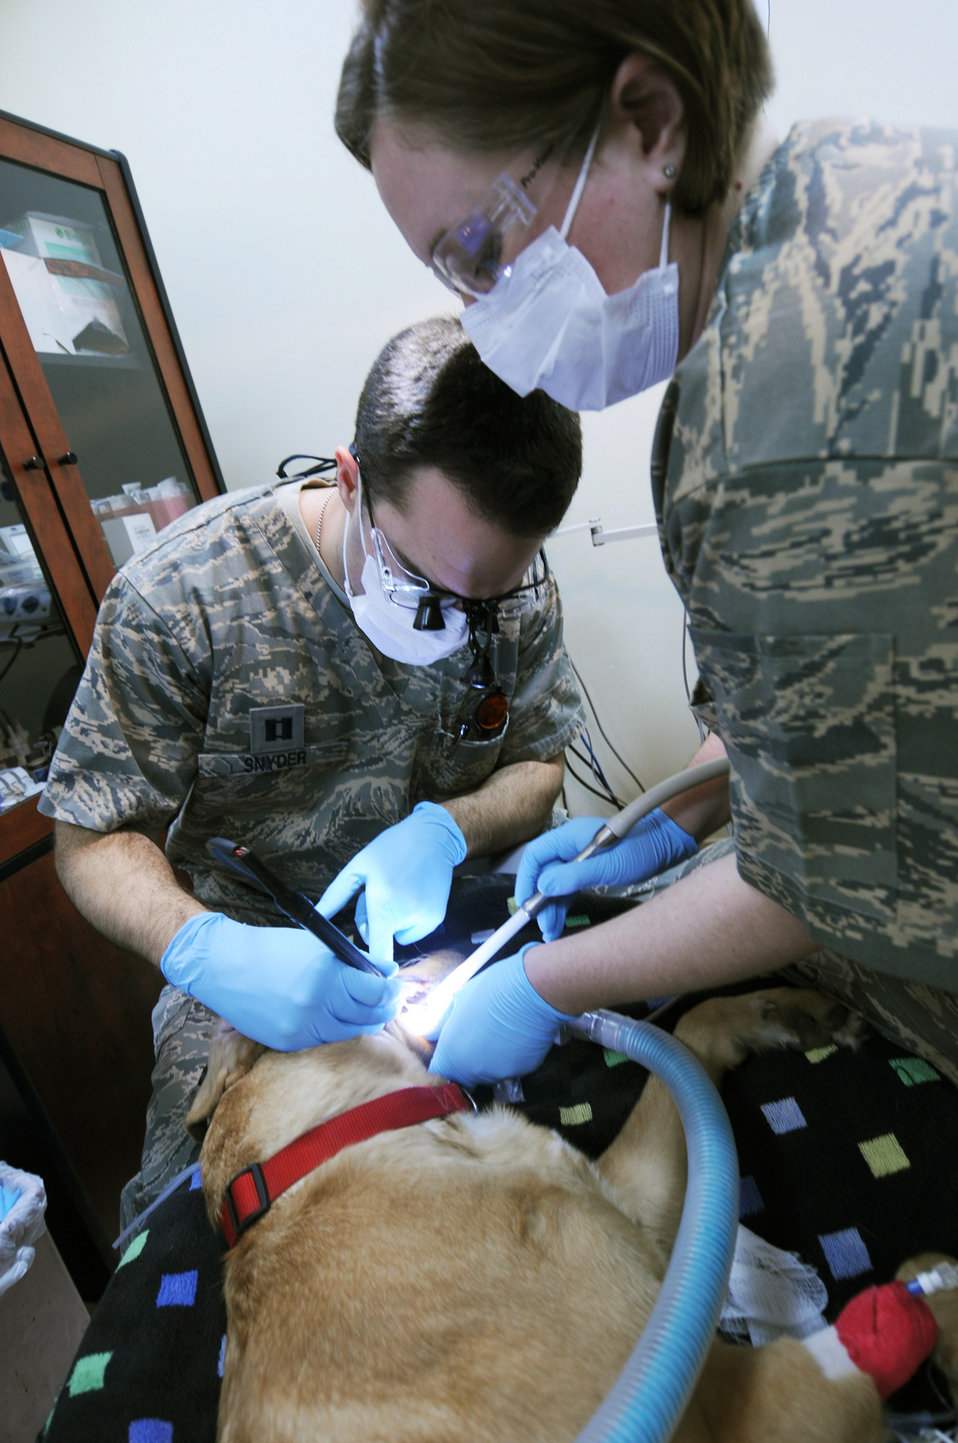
Deployed dentist has four-legged patients

Capt. Matt Synder performs a dental cleaning on Nina, a contract working dog, while Tech. Sgt. Mary Anne Neffle assists Jan. 1, 2011, in Southwest Asia. Nina is one of a number of working dogs who benefit from the partnership between the dentist and the veterinarian here. Captain Synder is a dentist with the 386th Expeditionary Medical Group. Sergeant Neffle is a dental technician with the 386th EMDG.